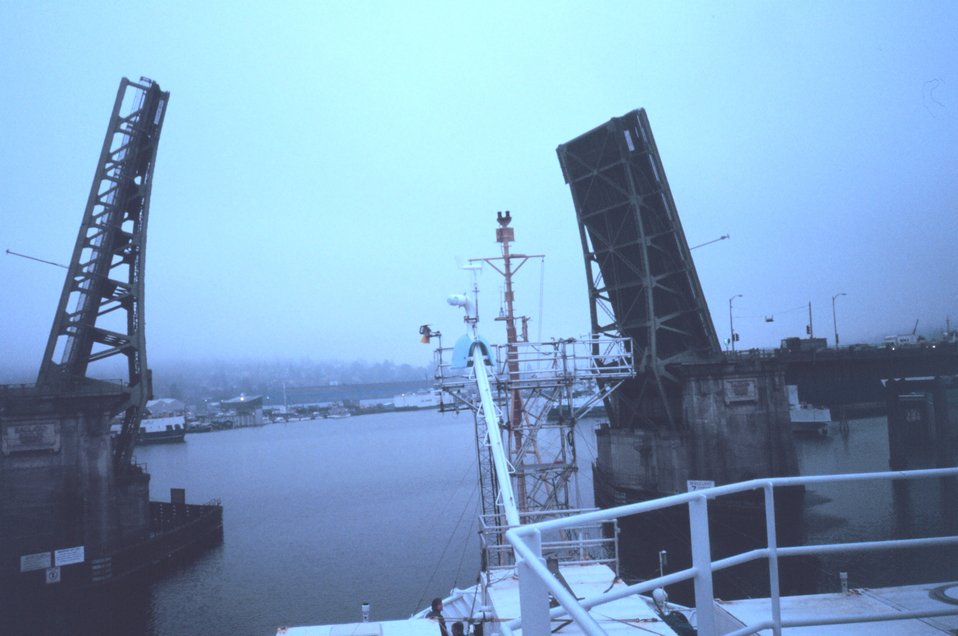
The 15th Avenue Bridge opening to allow the NOAA Ship RONALD H. BROWN passage into Lake Union.